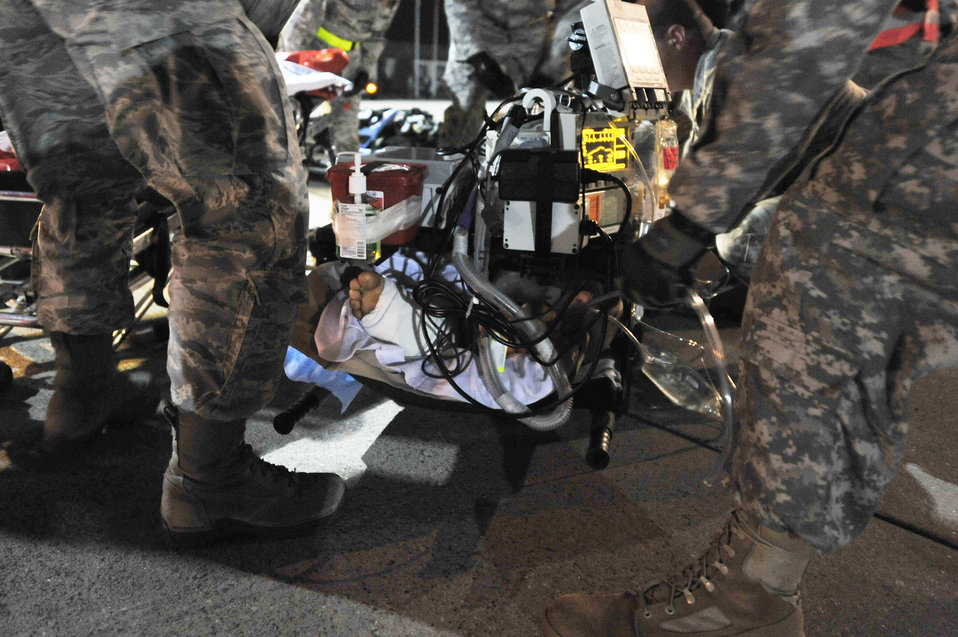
Airmen aid wounded Libyan fighters

A critical care air transport team from Landstuhl Regional Medical Center transport a wounded Libyan fighter Oct. 29, 2011, at Ramstein Air Base, Germany. The U.S. military transported four wounded Libyans for treatment in medical facilities in Europe and 28 to facilities in the United States.